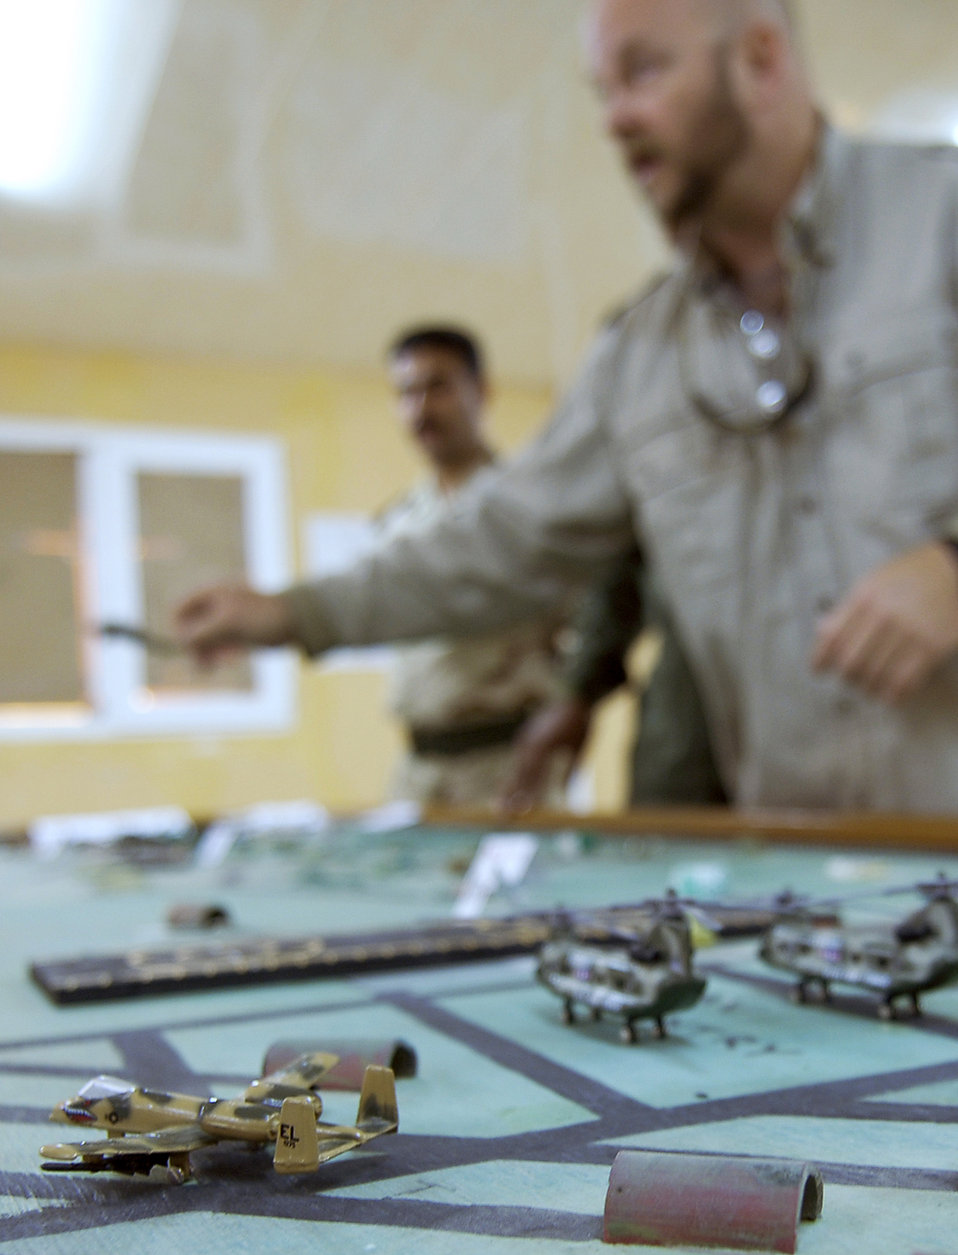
Air traffic advisers

Iraqi air force air traffic control students participate in aerodrome training, with guidance from David Fowler (right), an Iraq Training and Advisory Mission-Air instructor. The Iraqi air force students built a three-dimensional model airfield to better visualize concepts for departure clearances, aircraft separation distances and advanced ATC instruction in the aerodrome course.